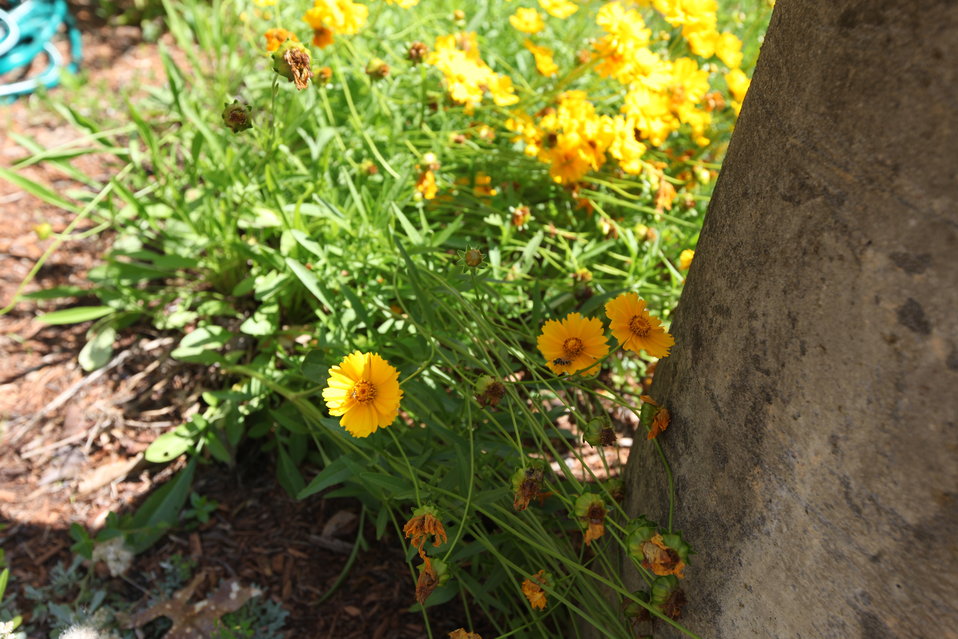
Northeast Regional Office Pollinator Garden

Photo by: Samantha Derrick
USFWS